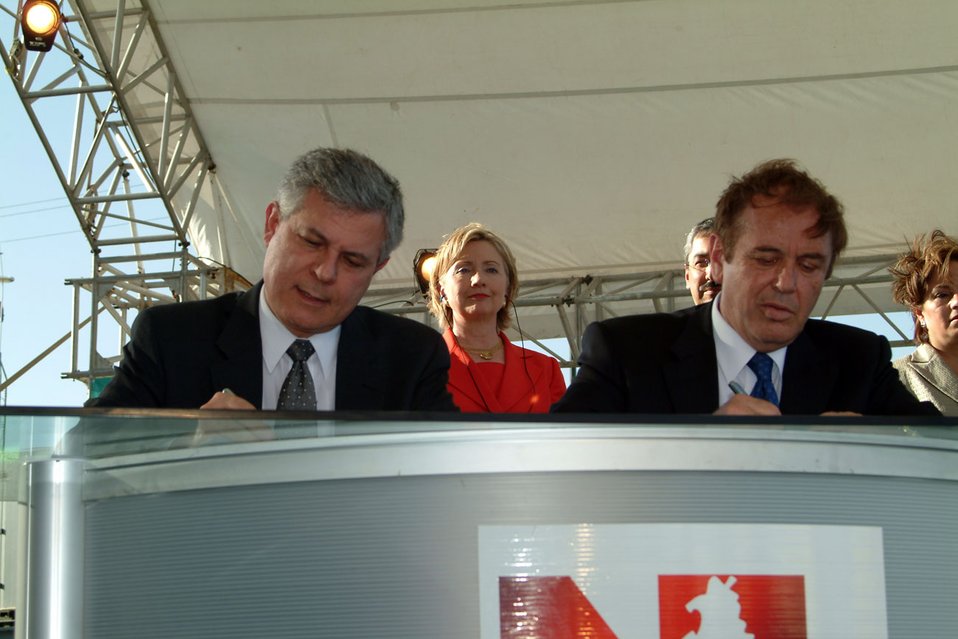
Secretary Clinton at Simeprode Power Plant

U.S. Secretary of State Hillary Rodham Clinton during a signing ceremony marking an agreement between the University of Nuevo Leon, Monterrey Institute of Technology and the University of Texas to investigate alternate sources of energy in Monterrey, Mexico March 26, 2009.